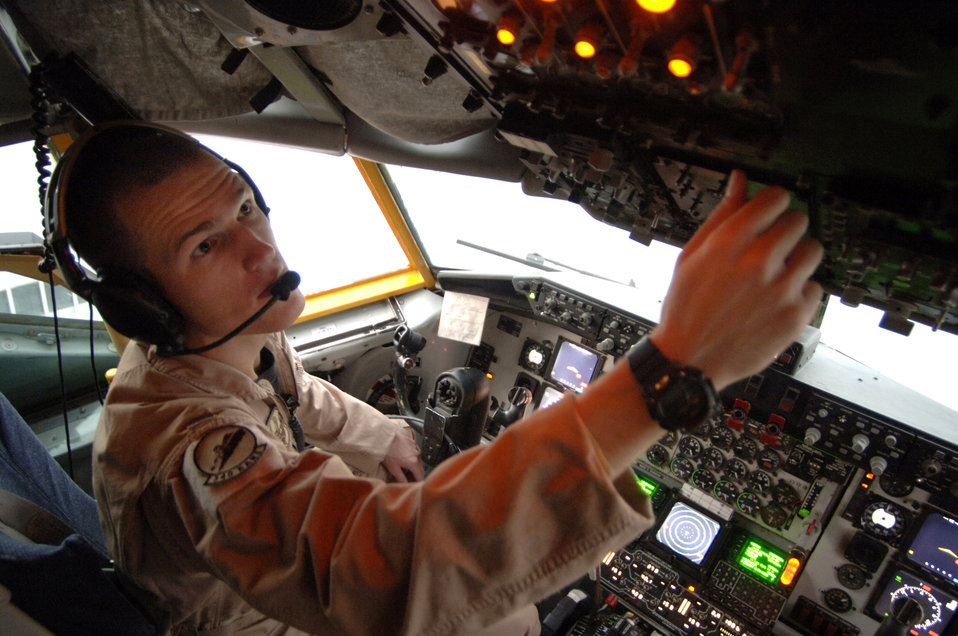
Sibling tanker pilots connect 7,700 miles from home

First Lt. Dustin Torbensen flies an air refueling mission on board a KC-135 Stratotanker in support of Operation Iraqi Freedom Nov. 25 over Iraq. Lieutenant Torbensen is deployed from Grand Forks Air Force Base, N.D., to Southwest Asia for a two-month rotation with the 379th Air Expeditionary Refueling Wing.